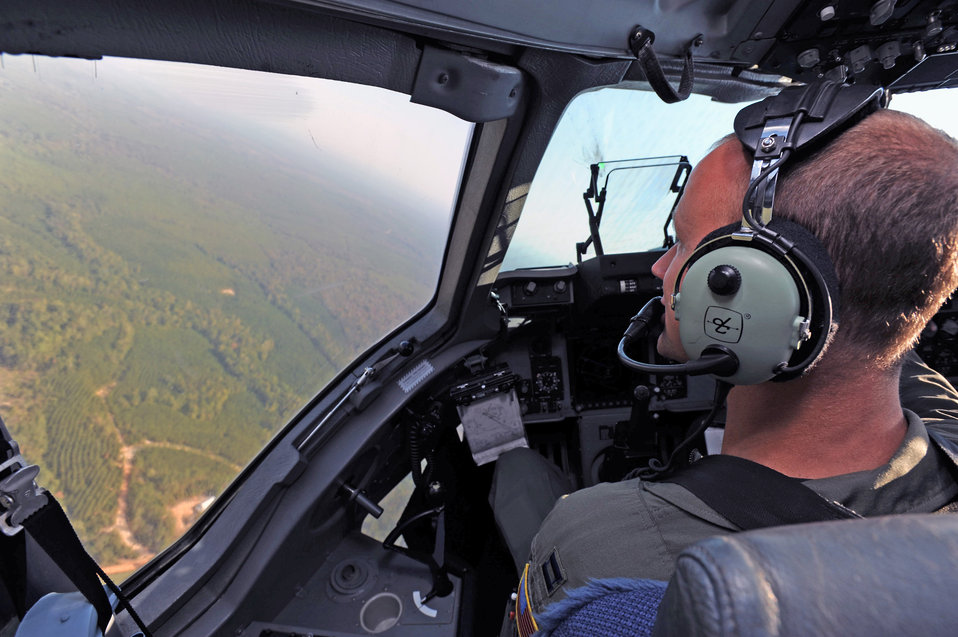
Hickam supports 507th Airborne school at Fort Benning, GA

Capt. Mark Fischer surveys the landscape during a turn Oct. 11, 2010, at Fort Benning, Ga. A C-17 Globemaster III aircrew from the 15th Wing flew from Hawaii to Fort Benning to support the student jump requirements of the 507th Airborne School. Captain Fischer is a 535th Airlift Squadron pilot from Joint Base Pearl Harbor-Hickam.